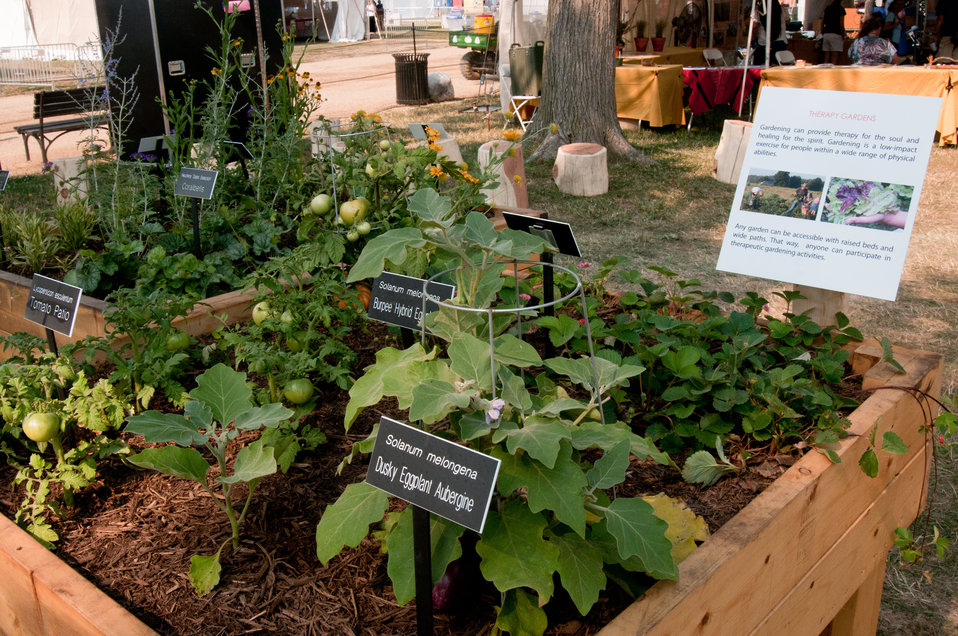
U.S. Department of Agriculture People’s Garden Initiative incorporate and display sustainable practices that nurture, maintain and protect the environment here at this living exhibit, during the 2012 Smithsonian Folklife Festival, on the National Mall in Washington, D.C., on Thursday, June 28, 2012. The types of gardens demonstrated include all access, edible, pollinator, and container. These gardens surround a shed with sustainable features utilizing reclaimed materials, making and using compost, setting up a rain barrel, and installing a green roof. 20-minute demonstrations on these sustainable practices are offered daily. One of the three themes this year is “Campus and Community.” It celebrates the 150 years of the USDA and the Land-Grant University System. The U.S. Department of Agriculture (USDA) and the Land-Grant system extend education across the country, contributing to American agriculture success and rural prosperity. “Campus and Community” has demonstrations, discussions, hands-on activities, and entertainment to that showcase the many ways that this partnership works to improve American agriculture and rural life.